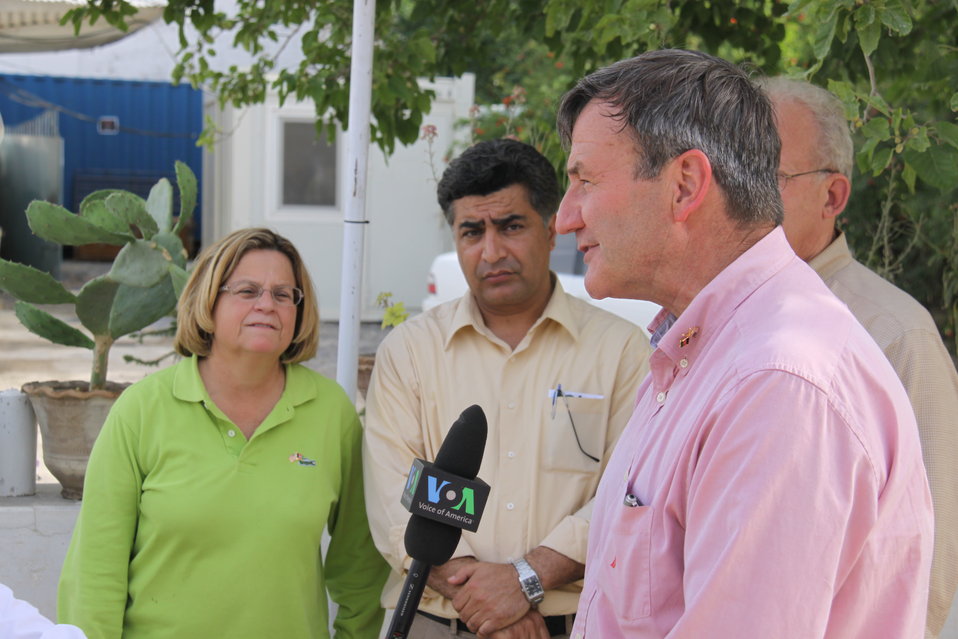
Meeting with Local Leaders in Kandahar